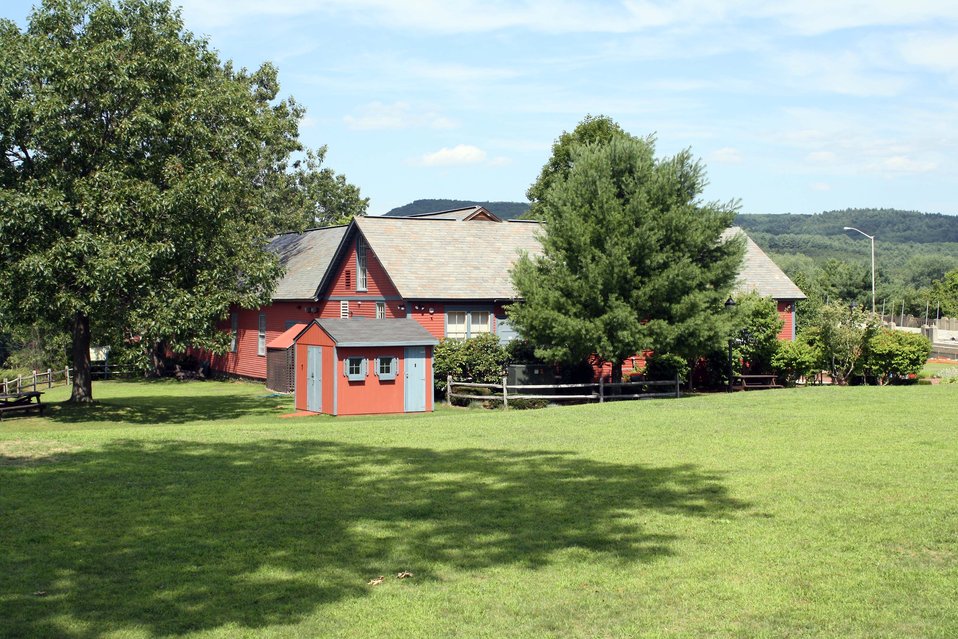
Great Falls Discovery Center

Turners Falls, Massachusetts.